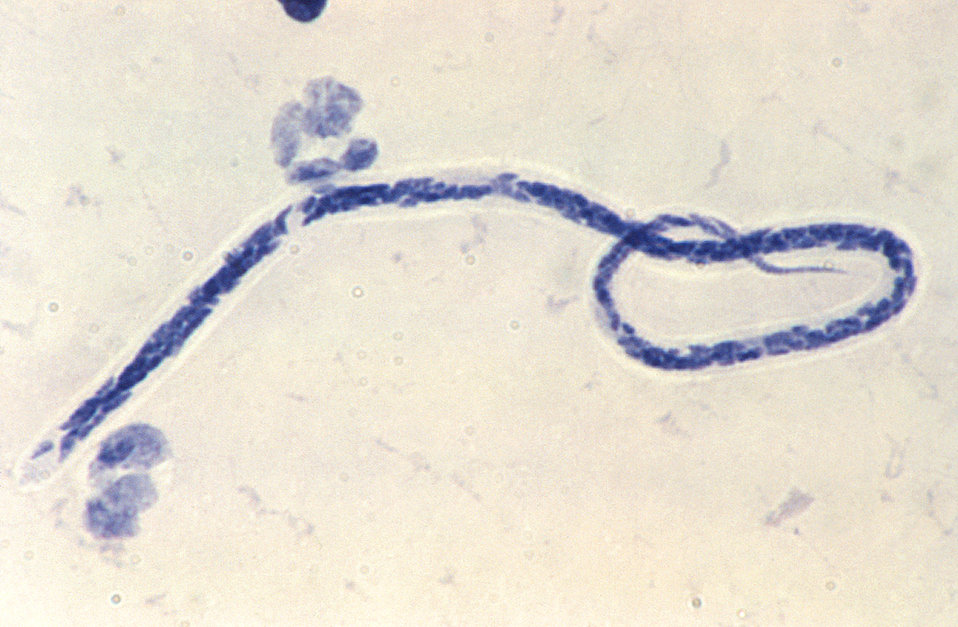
Under a relatively high magnification of 1000X; this Giemsa-satined photomicrograph revealed a detailed view of a single Mansonella ozzardi microfilaria.Laboratory Diagnosis: